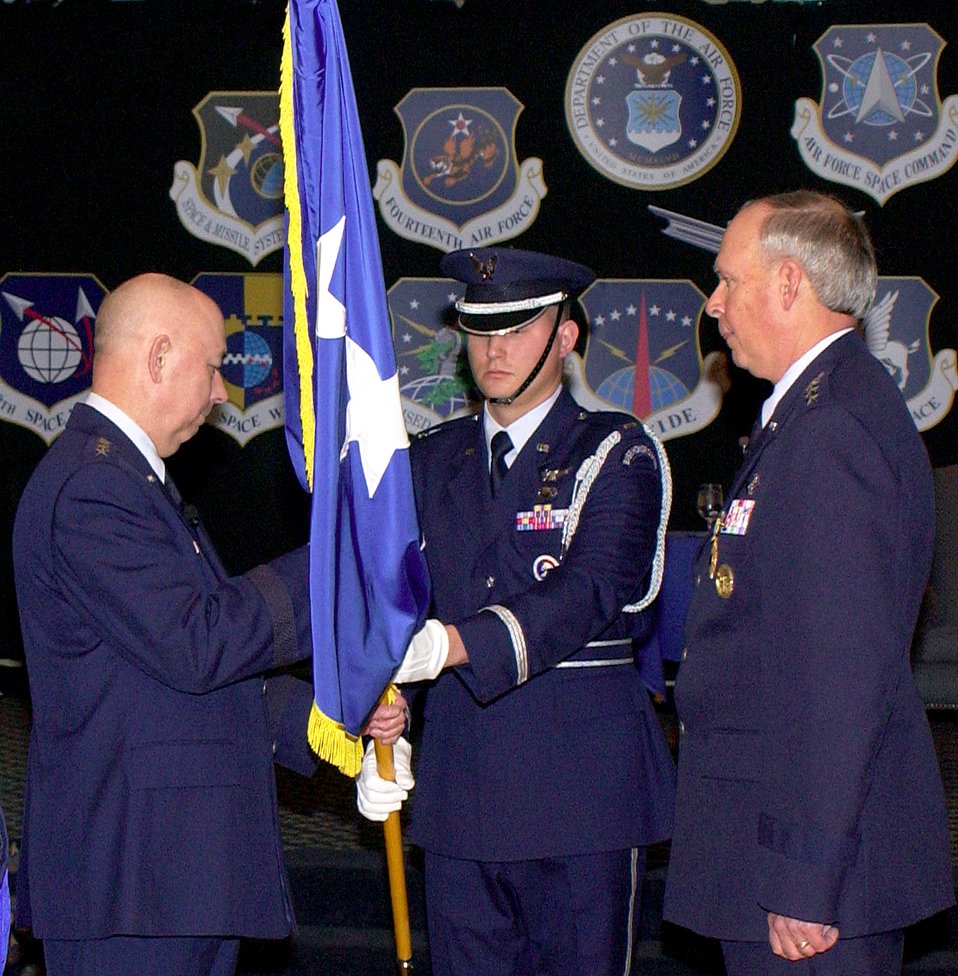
General Lord retires

Air Force Chief of Staff Gen. T. Michael Moseley, left, prepares to hand the Air Force Space Command four-star flag of command to Gen. Lance W. Lord, right, during his retirement ceremony at Peterson Air Force Base, Colo., Friday, March 3, 2006. General Lord retired after a 37-year Air Force career.